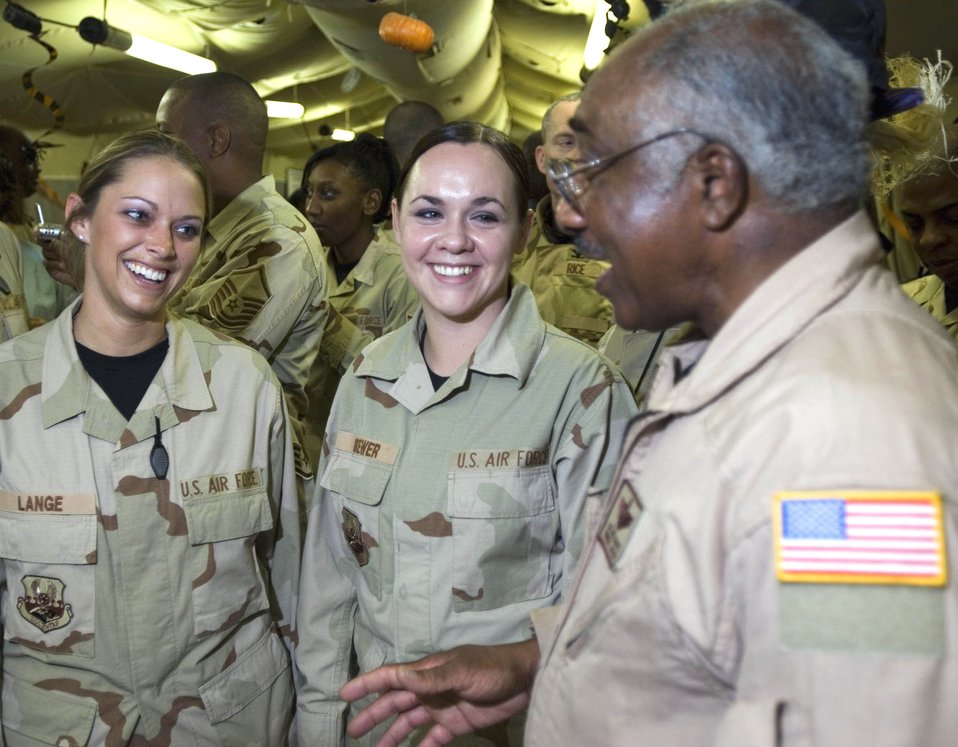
Tuskegee Airmen

BALAD AIR BASE, Iraq (AFPN) -- Tuskegee Airman Retired Col. Dick Toliver shares stories with Staff Sergeants Shawna Lange (left) and Jamie Brewer. The Tuskegee Airmen shared stories, encouragement, smiles and thanked patients at the 332nd Expeditionary Medical Group's Air Force Theater Hospital in central Iraq on Oct. 27. Sergeants Lange and Brewer work in the Medical Control Center.